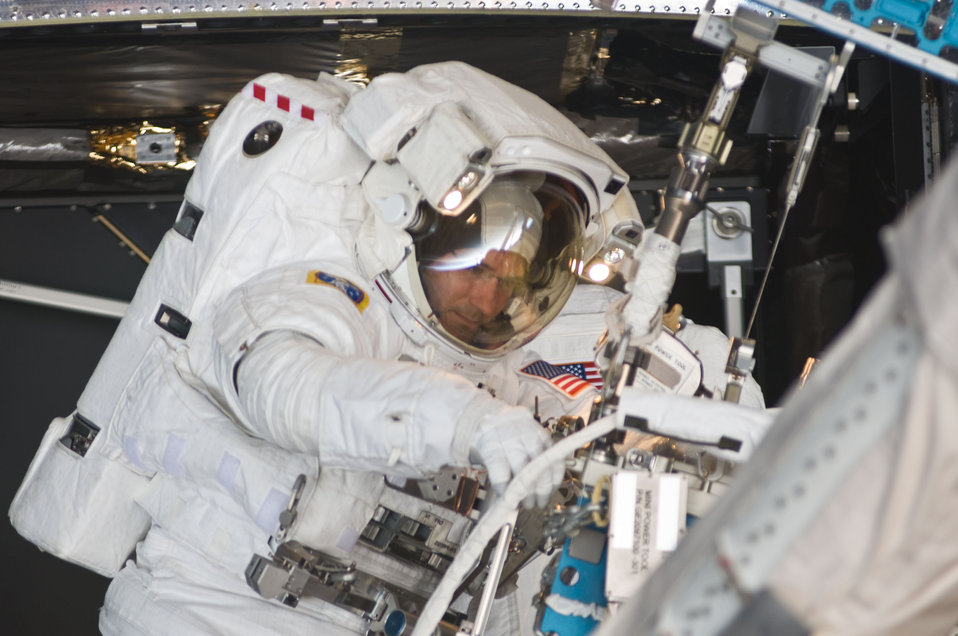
Air Force astronaut

Col. Michael Good, an astronaut on mission STS-125, participates in the mission’s fourth session of extravehicular activity May 17, 2009, as work continues to refurbish and upgrade the Hubble Space Telescope. During the eight-hour, two-minute spacewalk, Colonel Good continued repairs and improvements to the Space Telescope Imaging Spectrograph that will extend the Hubble’s life into the next decade.